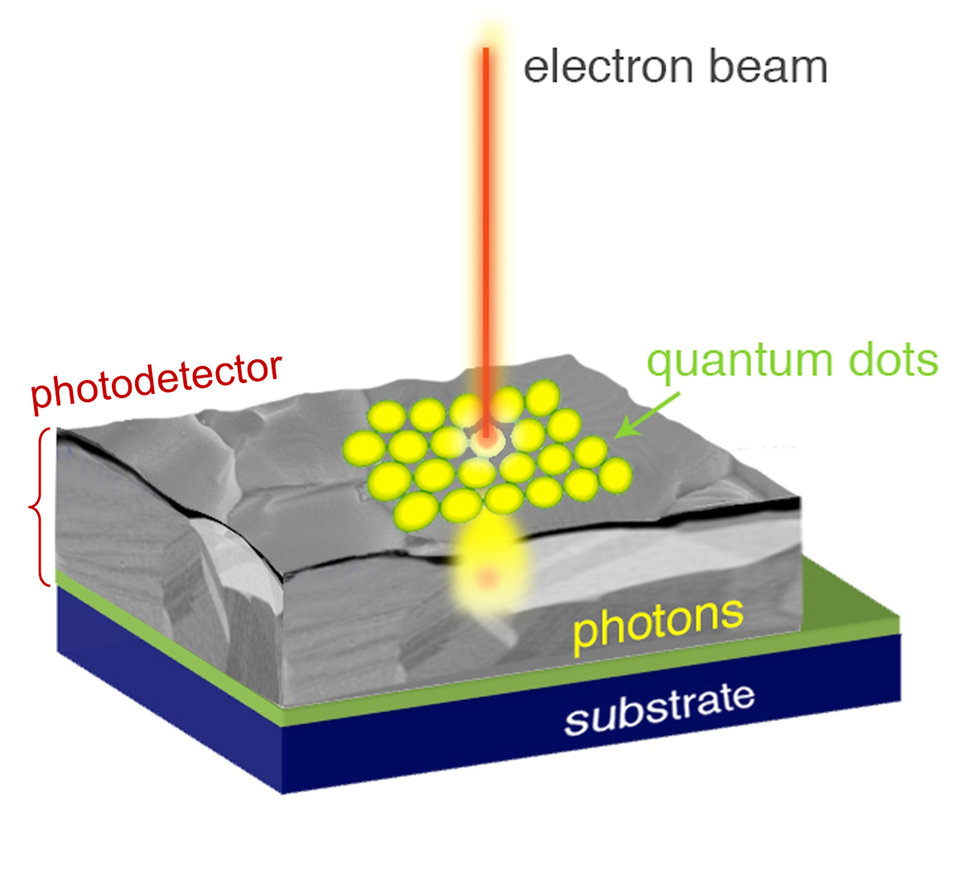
Quantum Dots

Much like in an old tube television where a beam of electrons moves over a phosphor screen to create images, the new microscopy technique works by scanning a beam of electrons over a sample that has been coated with specially engineered quantum dots. The dots absorb the energy and emit it as visible light that interacts with the sample at close range. The scattered photons are collected using a similarly closely placed photodetector (not depicted), allowing an image to be constructed.